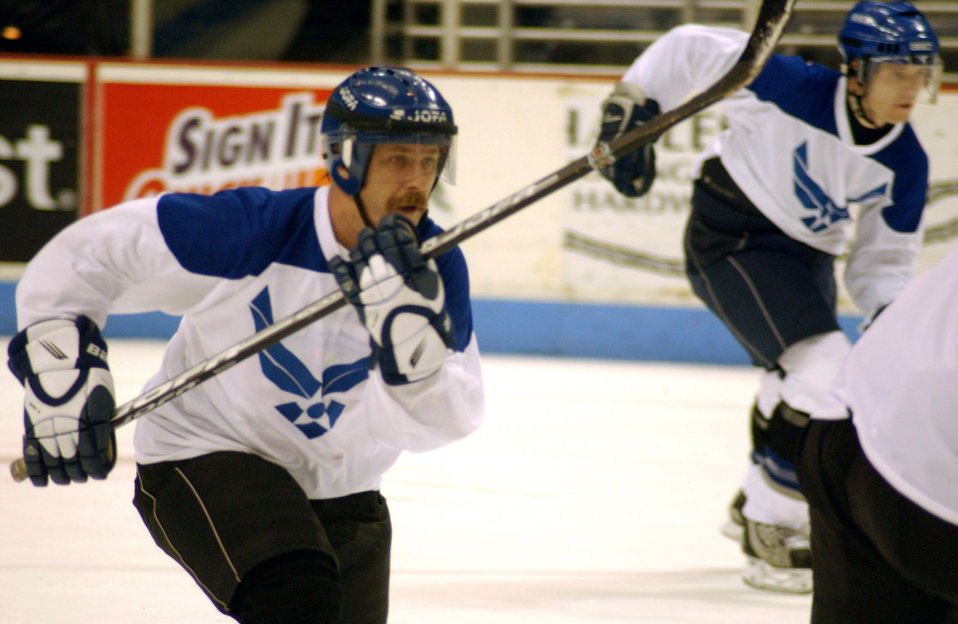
Air Force drops puck on Navy

CHARLESTON AIR FORCE BASE, S.C. (AFPN) -- Karl Nichols races to beat a Navy player to a loose puck during an exhibition hockey game held Feb. 8 at the North Charleston Coliseum. Nichols helped lead the Air Force team to an 8-6 victory, scoring two goals and an assist. The game was part of the South Carolina Stingrays Military Appreciation Night honoring those serving their country. Charleston-based servicemembers made up the teams.